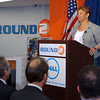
2011-07-20eWasteAustin008-Ti